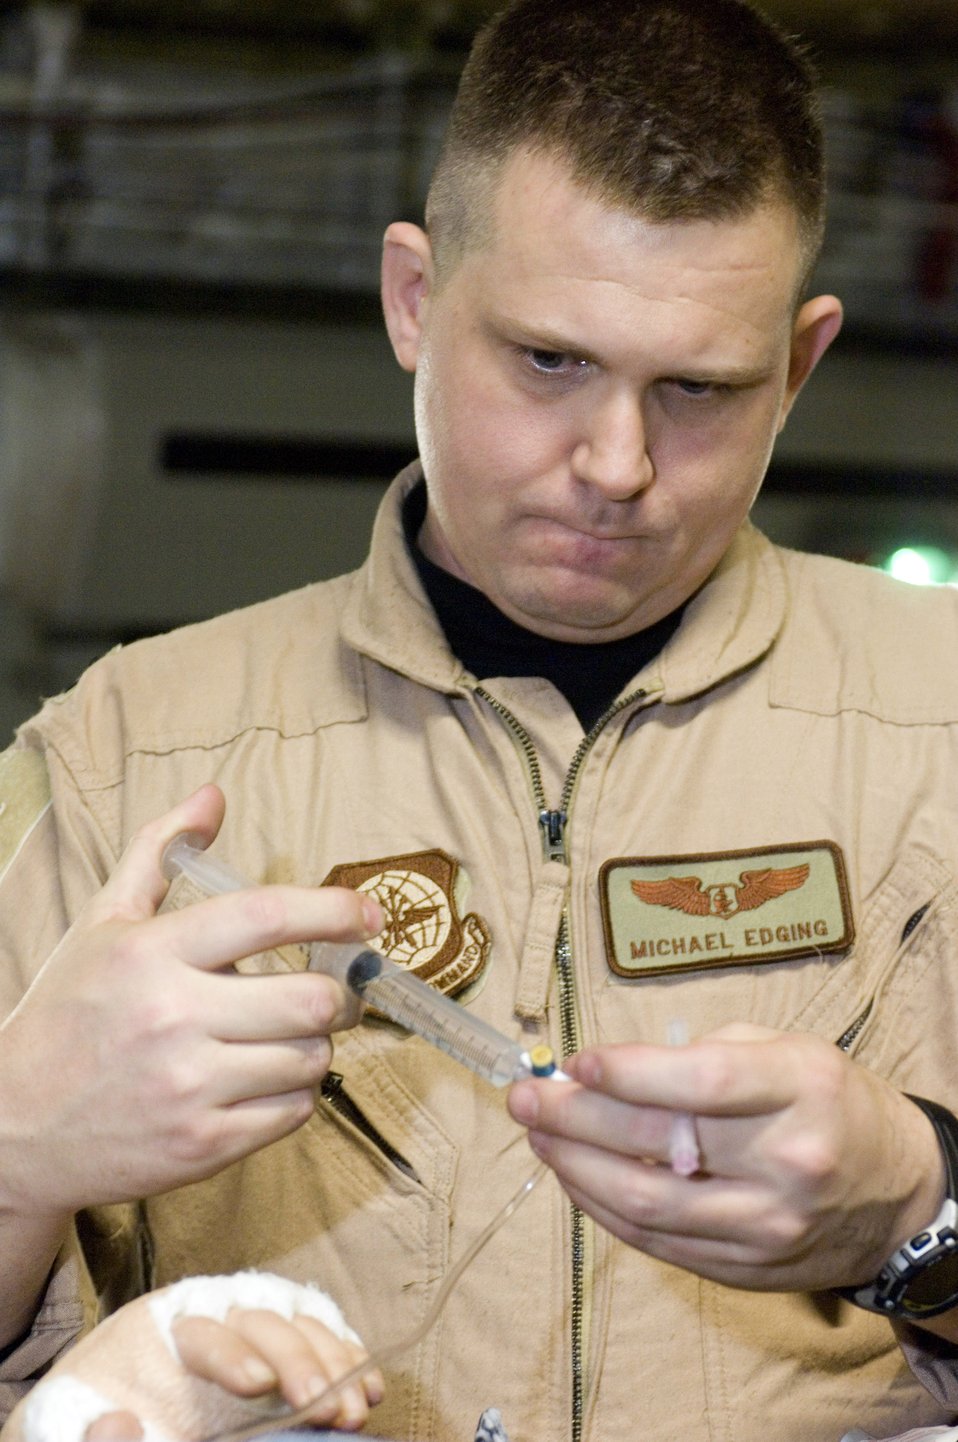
Air care

OVER IRAQ (AFPN) -- Capt. Michael Edging injects a patient's medicine while on a C-17 Globemaster III bound for Germany. Captain Edging is a flight nurse with the 791st Expeditionary Aeromedical Evacuation Squadron moving servicemembers to health-care facilities in Germany and the U.S. He deployed from the 43rd AES at Pope Air Force Base, N.C.